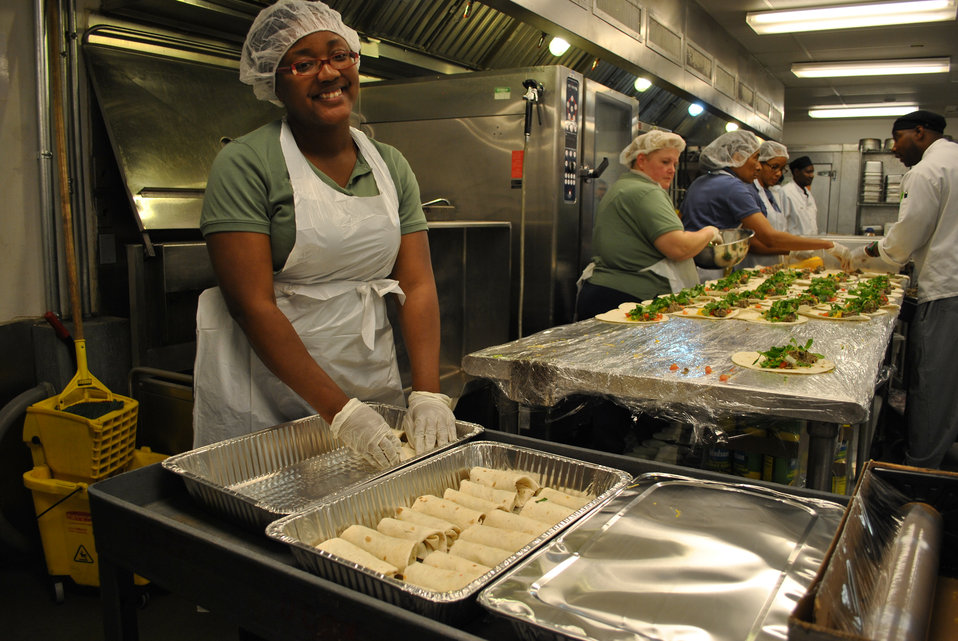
U.S. Department of Agriculture (USDA) volunteers prepare all of the ingredients for bean burritos, which include shredded mild cheddar cheese, diced tomatoes, chopped bok choy, mashed lentils and black beans. The bok choy was grown in the USDA headquarters Peoples Garden and donated to DC Central Kitchen.